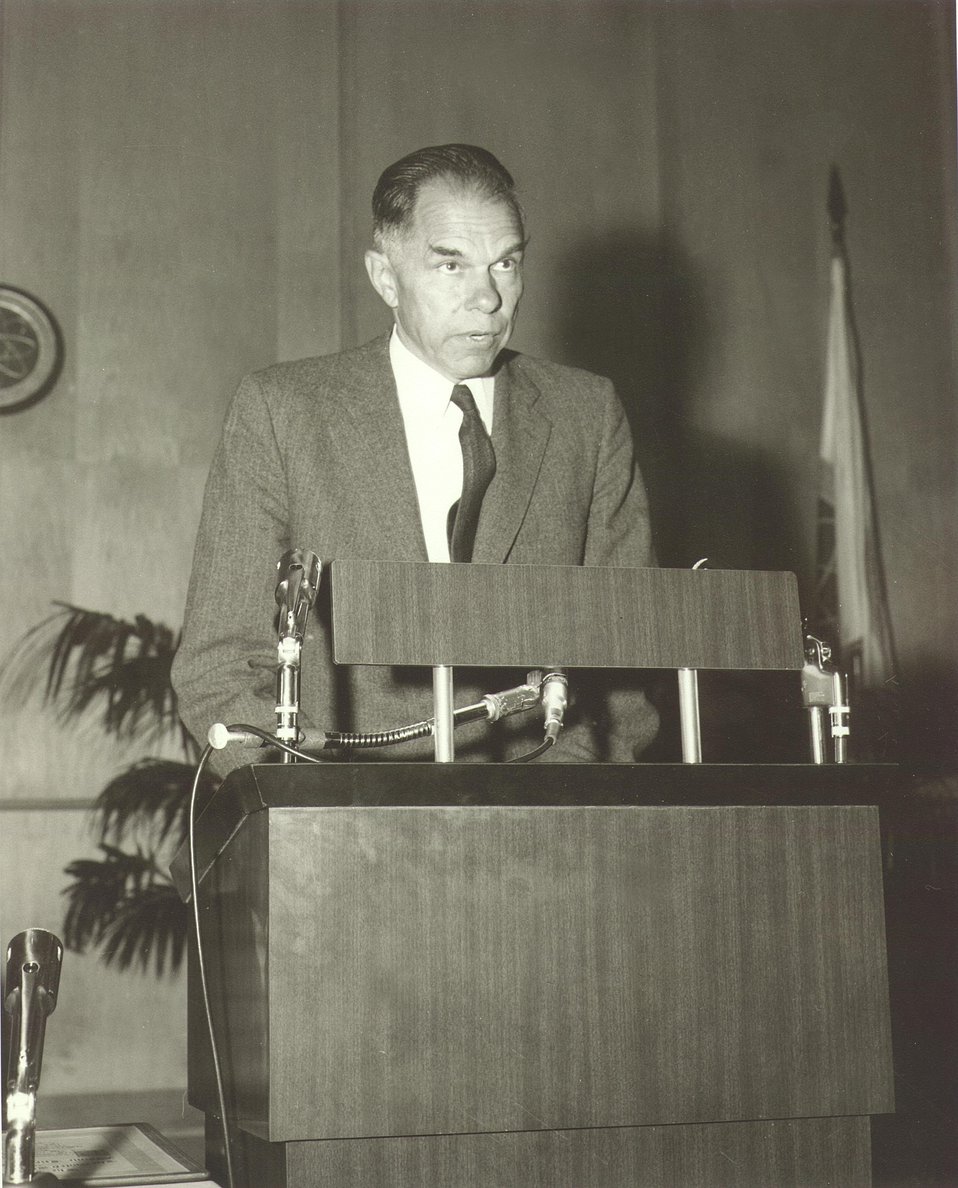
Fermi Award Ceremony for Dr. Seaborg on Dec. 2, 1959.